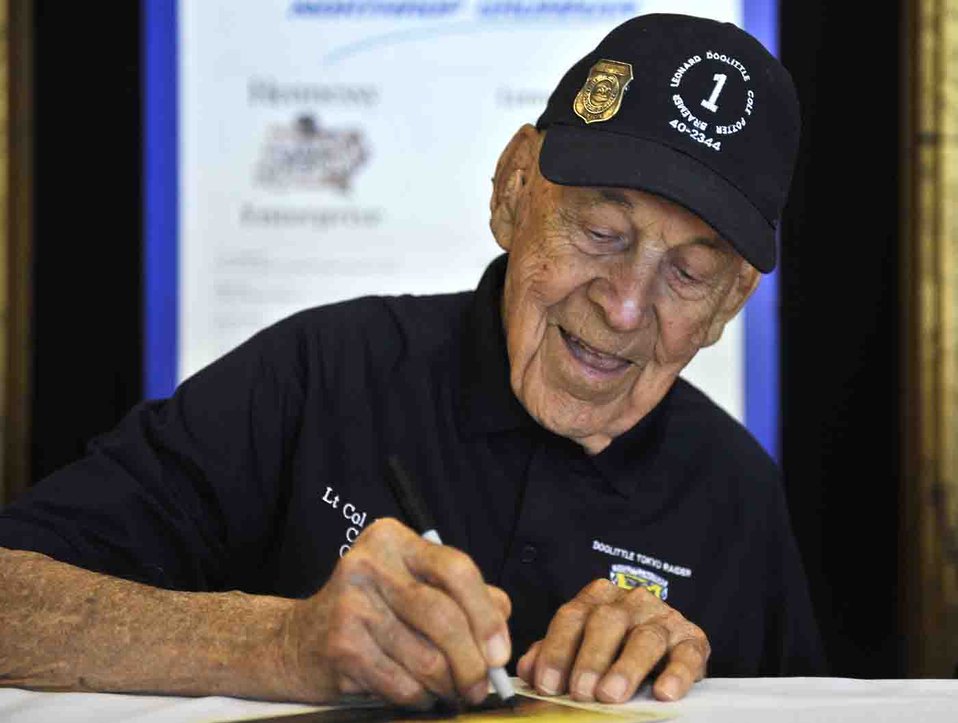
Doolittle Raid 70th anniversary

Lt. Col. Richard E. Cole co-pilot of Gen. Jimmy Doolittle's B-25 plane #1, signs autographs during a meet and greet with the raiders for their 70th reunion, April 19 at the Hope Hotel, Fairborn, Ohio. At 96, Cole is the oldest of the remaining five Raiders and says the attention they receive still surprises him.